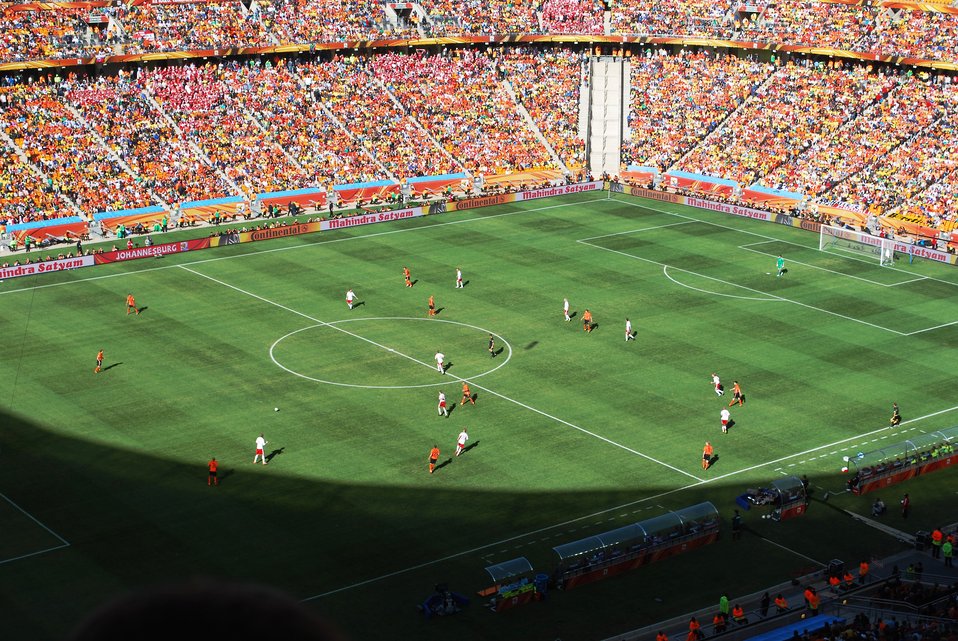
The Netherlands plays Denmark in a World Cup soccer match at Soccer City Stadium in Johannesburg, South Africa, on June 14, 2010.